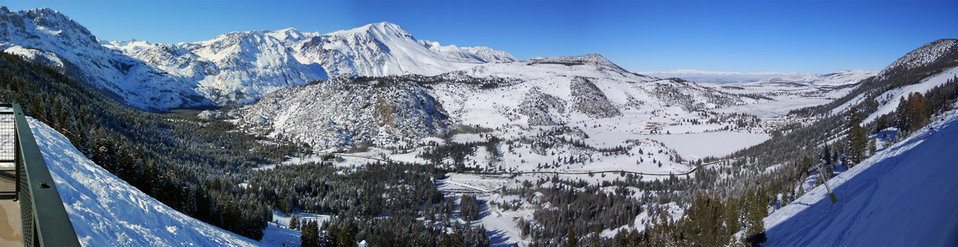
June lake valley, california, usa

View of june lake valley from june mountain ski resort restaurant.